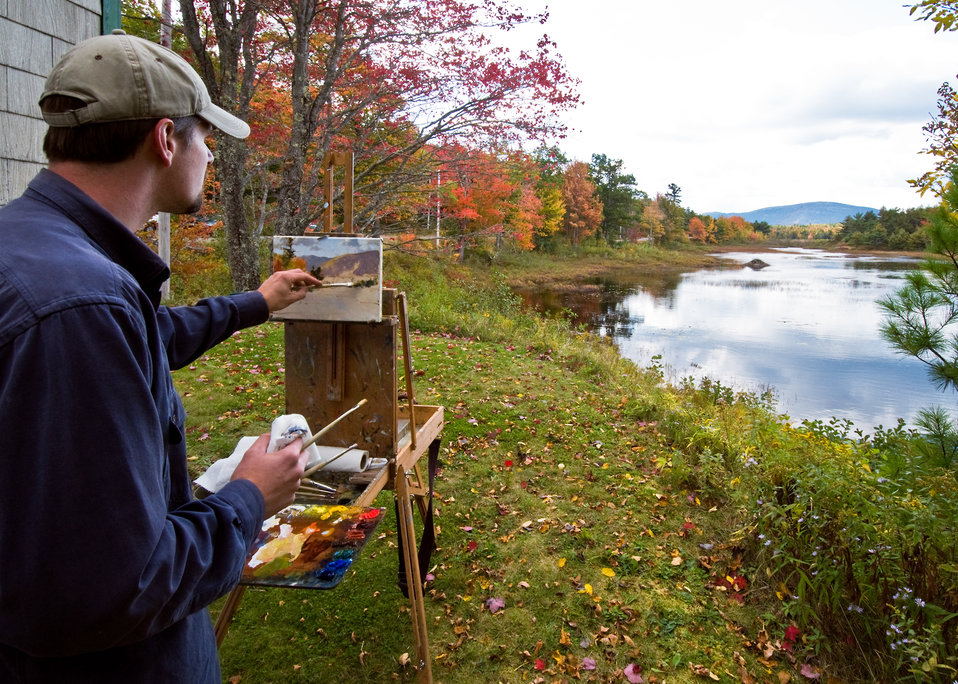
An artist visiting the White Mountain National Forest in Maine finds an unlimited palette of colors only nature could conceive.